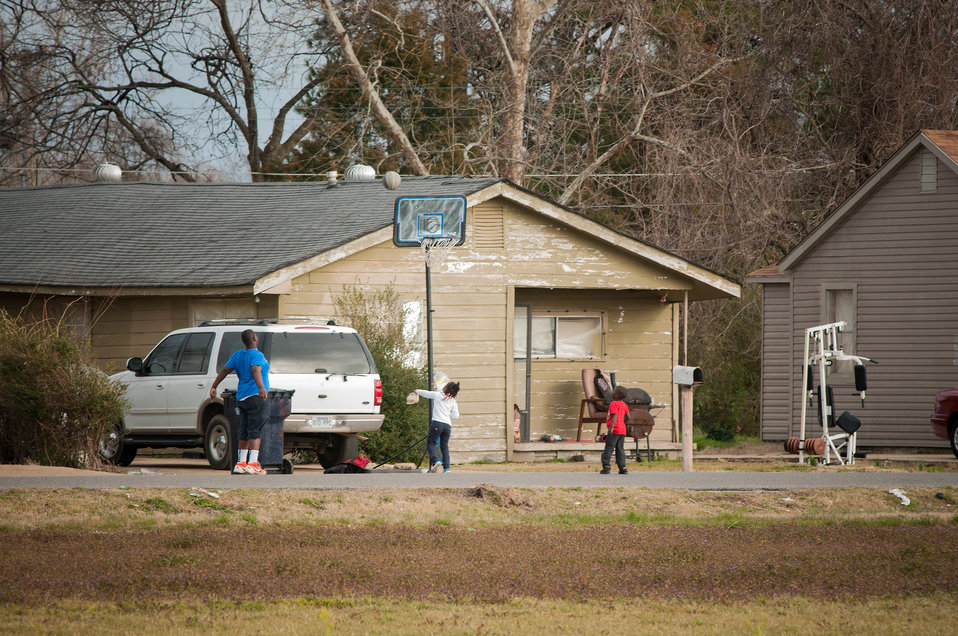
A family plays basketball in Forest City, AR on Mar. 4, 2013. The U.S. Department of Agriculture (USDA) in partnership with Heifer International (an International organization whose mission is to work with communities to end hunger and poverty and care for the Earth) and various for-profit and non-profit organizations have organized the Seeds of Change Implementation Plan to use sustainable agriculture to build food systems in the Arkansas Delta. The program has evolved into the Arkansas Delta Seeds of Change (ADSOC) Initiative. The East Arkansas Enterprise Community, Inc. in Forrest City, AR is one of 42 community-based organizations located in high poverty areas in the U.S.to benefit from the ADSOC Initiative.